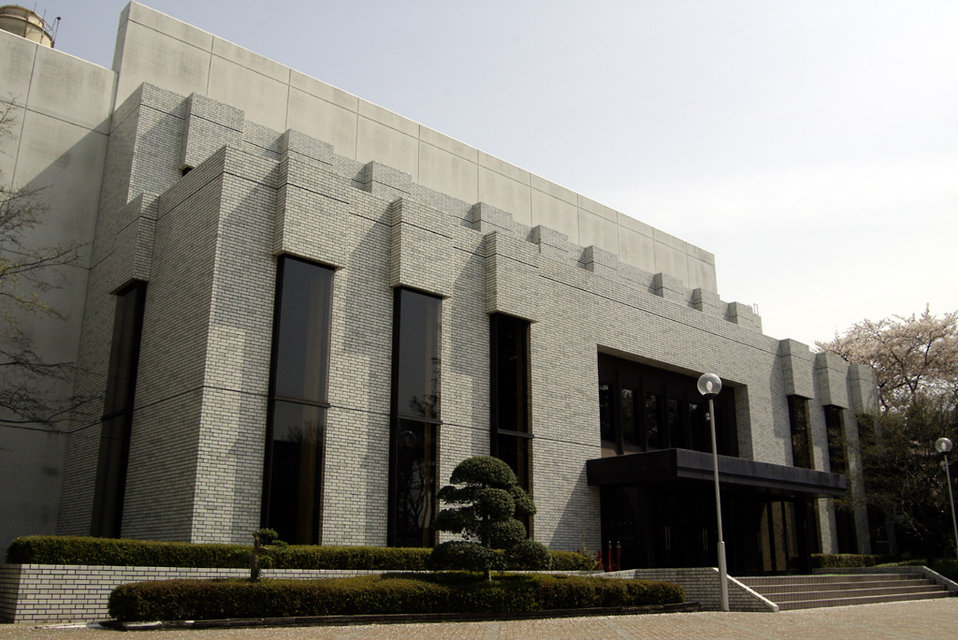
日本語: 電気通信大学 講堂の風景。 University of Electro-Communications lecture building